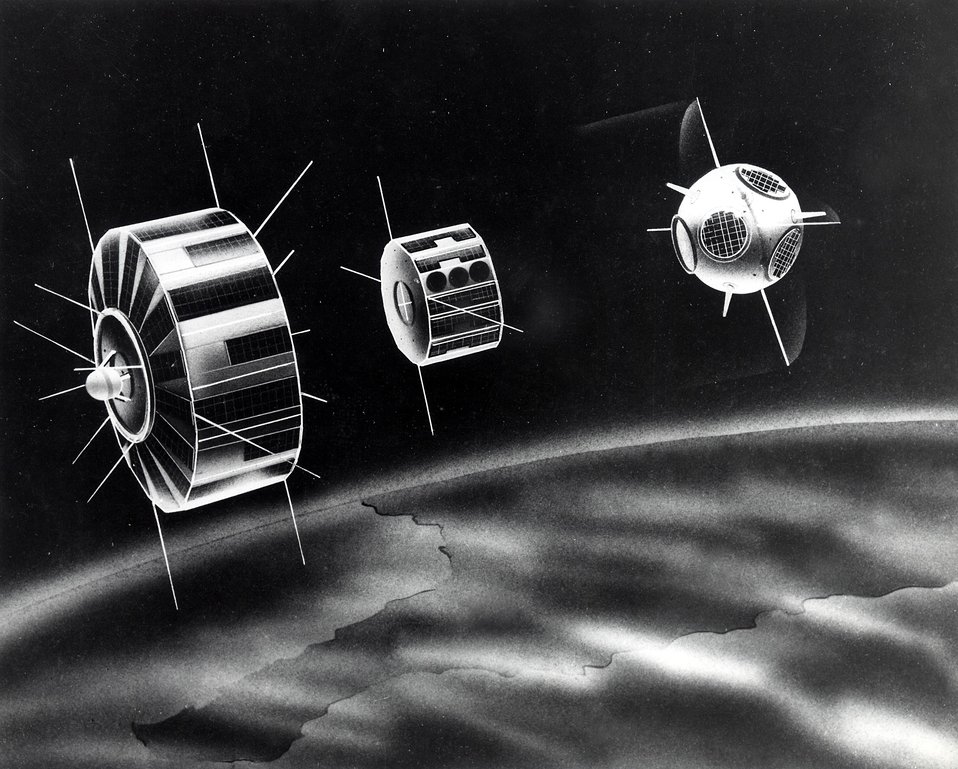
Artist's concept of the Transit IV-A satellite in orbit.